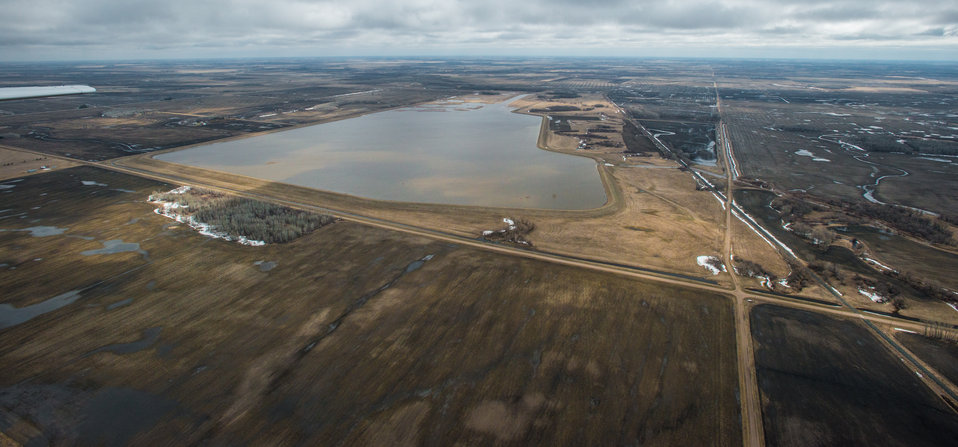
Snake River Watershed Off Channel Storage Site, east of Warren, MN, Wednesday, May 1, 2013. For information about this and other programs from the USDA Red River Basin Initiative (RRBI) please see www.mn.nrcs.usda.gov/news/features13/RRBI.html.